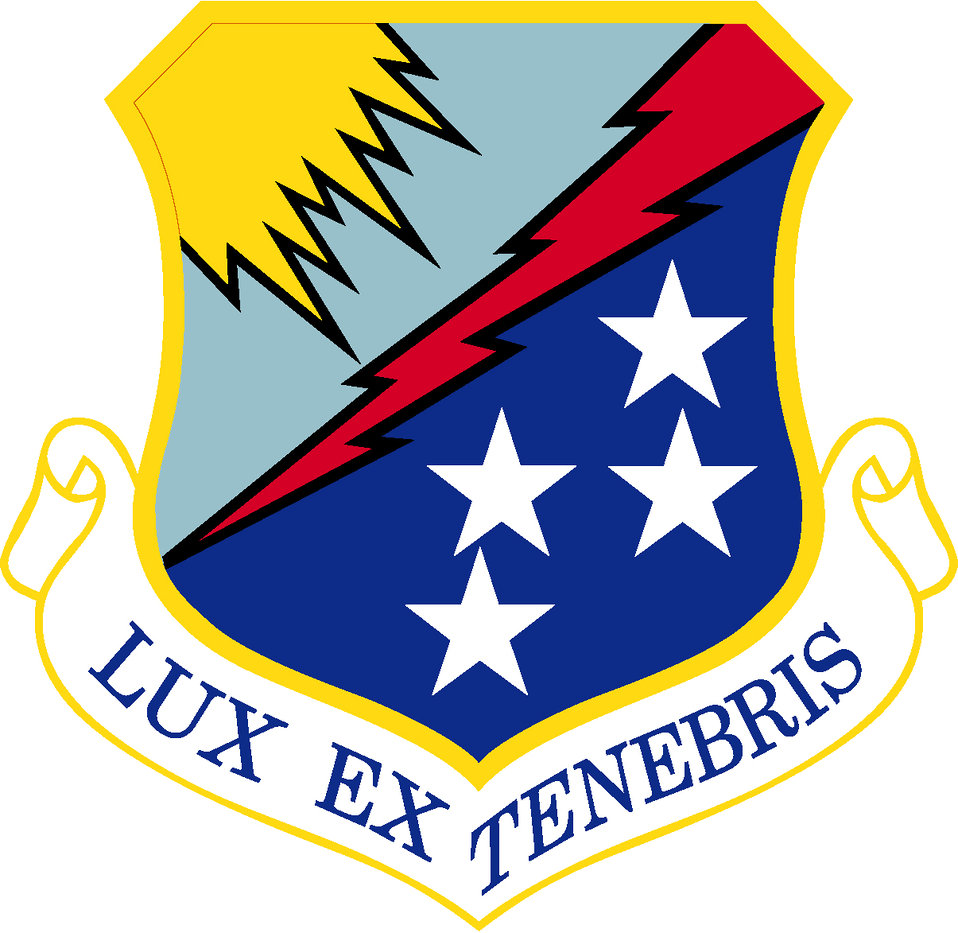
67th Network Warfare Wing shield